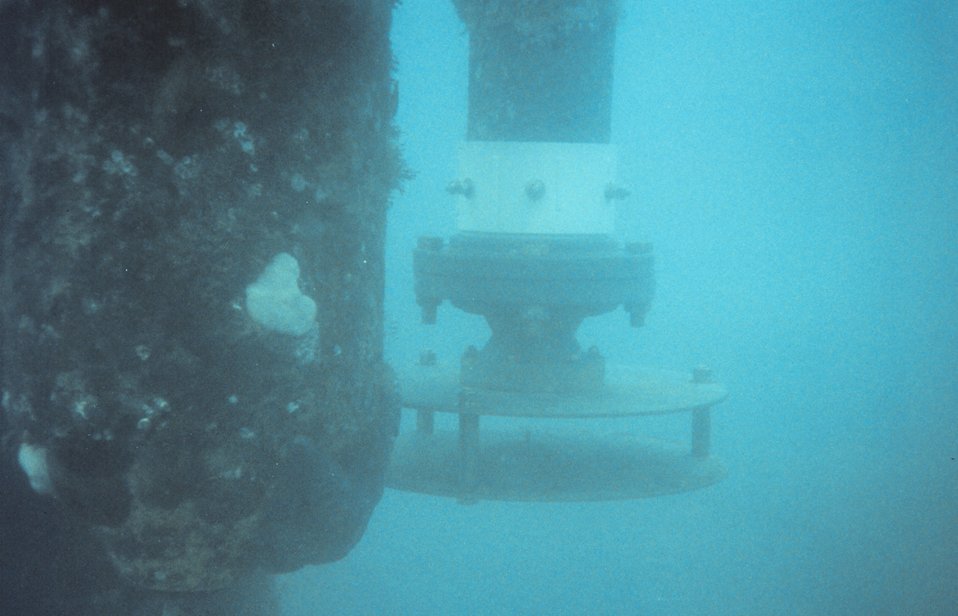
Orifice of A.I. &NXG tide gage installation at Cherry Point.